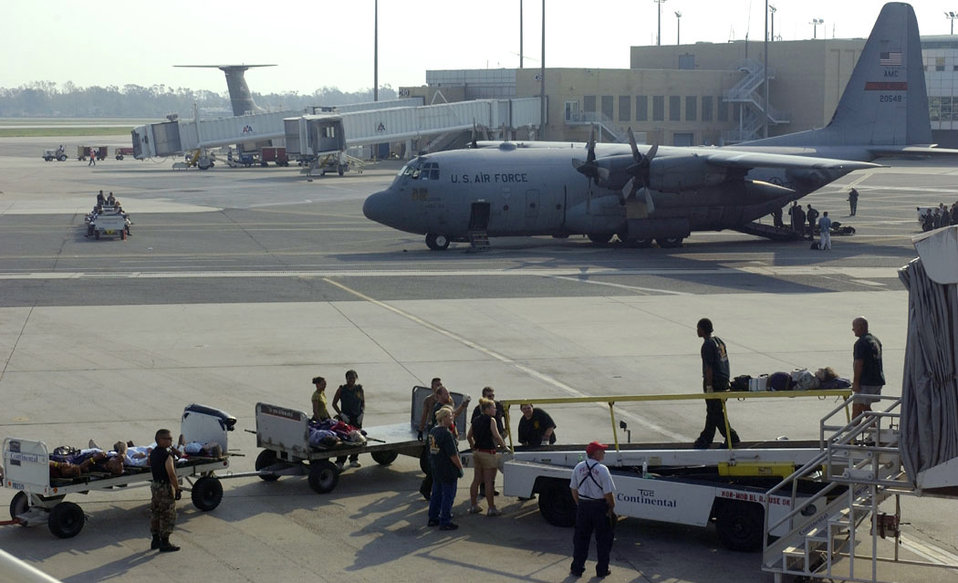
Air Force MASF is last stop for some hurricane victims in New Orleans

NEW ORLEANS -- Elderly patients are moved to awaiting aircraft for evacuation from here Sept. 3. More than 2,000 patients have been evacuated since operations began.